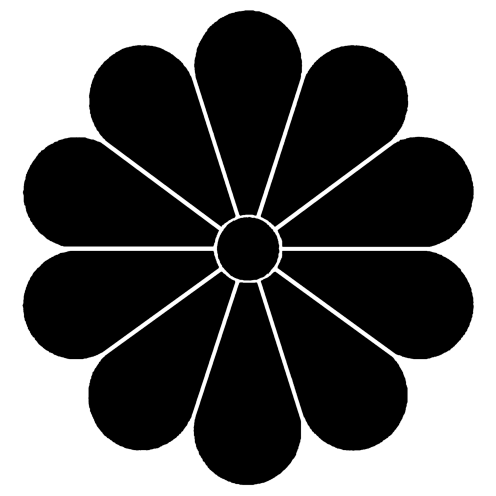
菊紋（菊花紋）の一例（十菊）